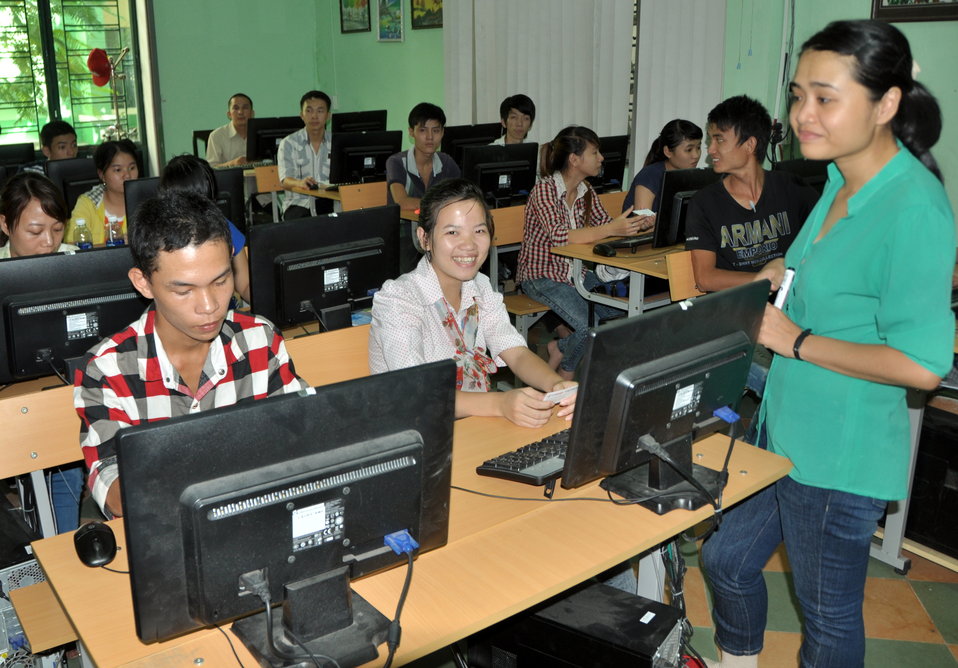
USAID Visits IT Training Program for People with Disabilities at Dong A University

Danang, Vietnam
July 17, 2013